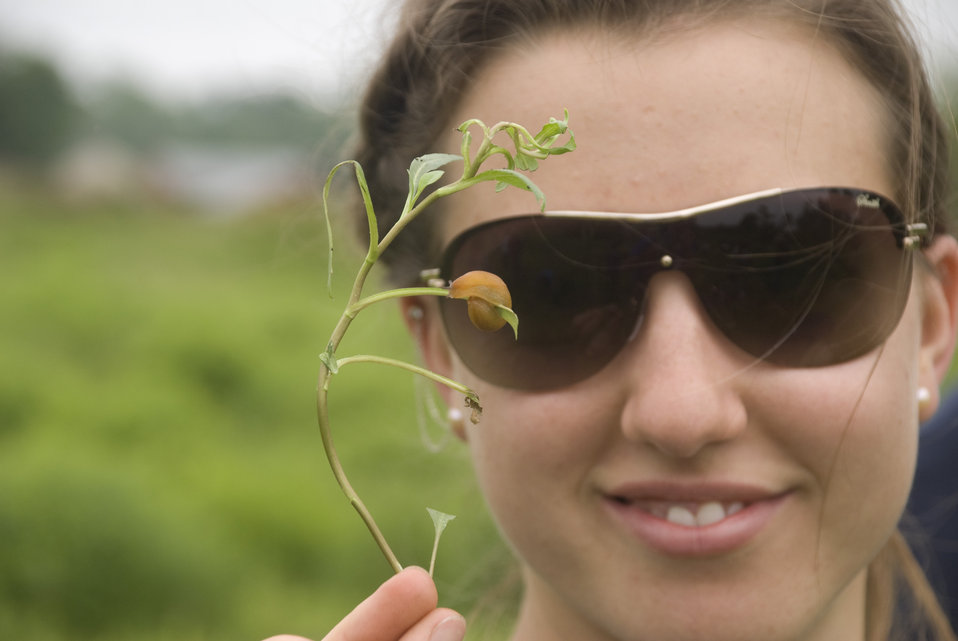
CIP Student and Slug

CIP Student Melissa Lesh and her slug.